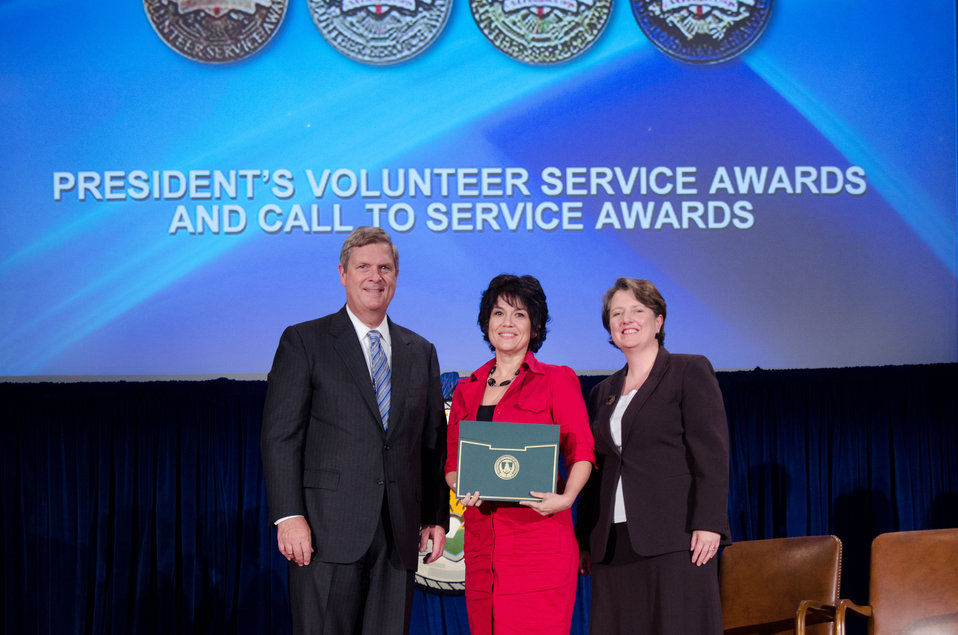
Agriculture Secretary Tom Vilsack (l) and Deputy Secretary Kathleen Merrigan (r), presents the President’s Volunteer Service Awards and Call to Service Award to Mitzi Lankford accepting on behalf of Tarry Hetzel, Farm Service Agency. On Wednesday, September 14, 2011 in the Jefferson Auditorium at the US Department of Agriculture in Washington, DC.